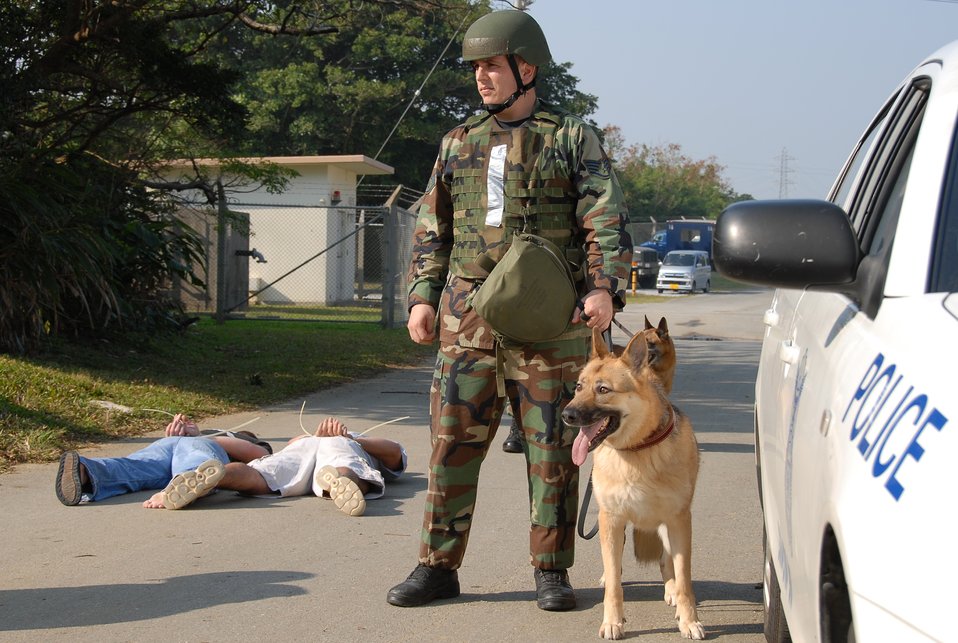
Keeping canine protectors safe

Staff Sgt. John Grice, a dog handler with the 18th Security Forces Squadron at Kadena Air Base, Japan, responds to a simulated protest during a local operational readiness exercise. The exercise tested the ability of base Airmen to respond to contingency situations.